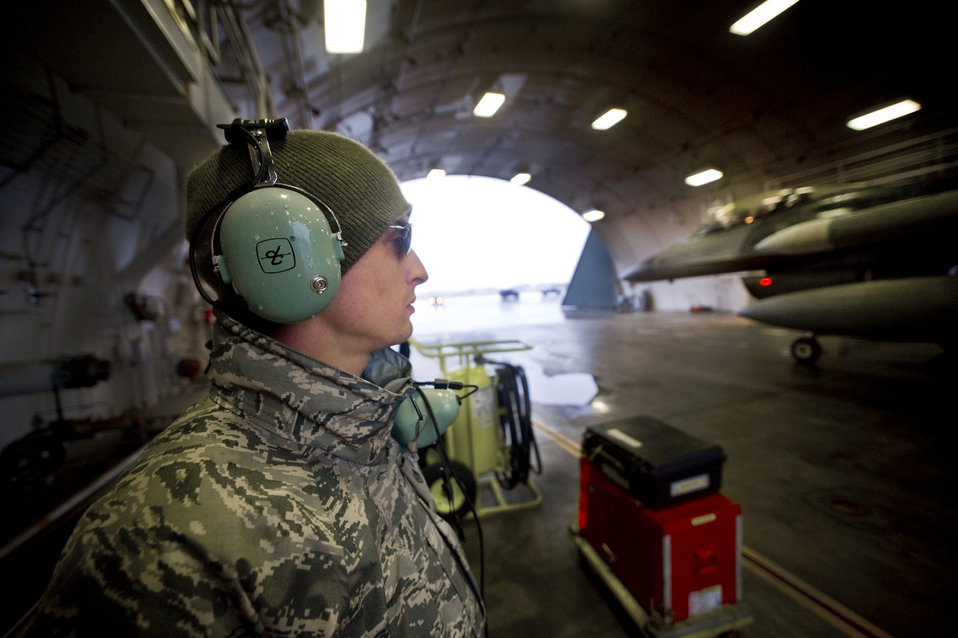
National Guard Airmen augment Misawa maintenance

Staff Sgt. Benjamin Casarez stands by to help power down a returning jet March 6 at Misawa Air Base, Japan. Sergeant Casarez is an F-16 Fighting Falcon crew chief deployed from McEntire Air National Guard Station, S.C. He is one of 31 Air National Guardsmen assigned to help fill manning shortages throughout the 35th Maintenance Group.